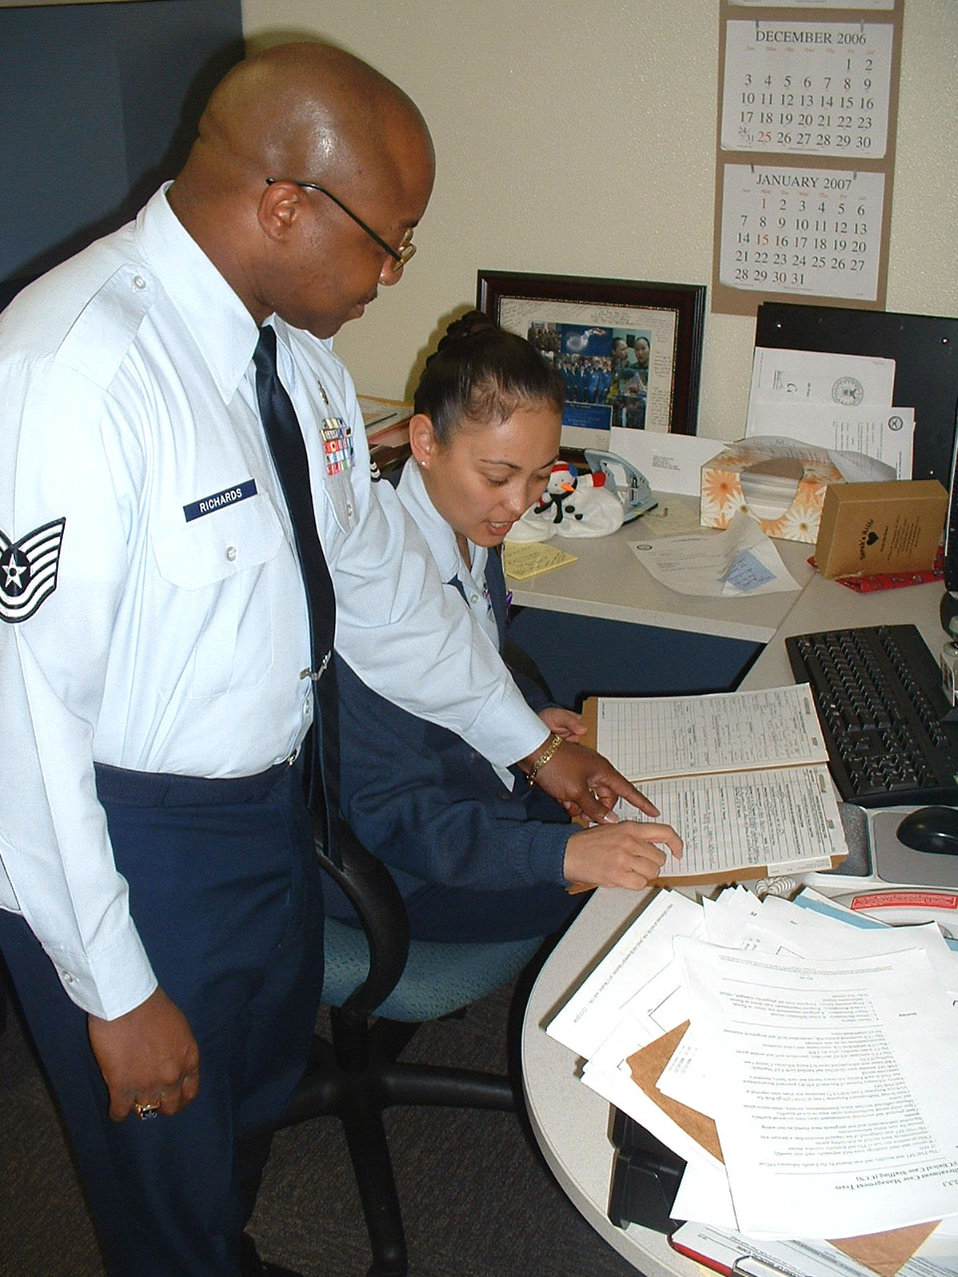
Serving through the season: Tech. Sgts. Fernando and Flor Richards

Tech. Sgts. Flor and Fernando Richards discuss a patient record at Kadena Air Base's Life Skills Center on Okinawa, Japan. Both work as mental health technicians and see an influx of patients during the holidays.